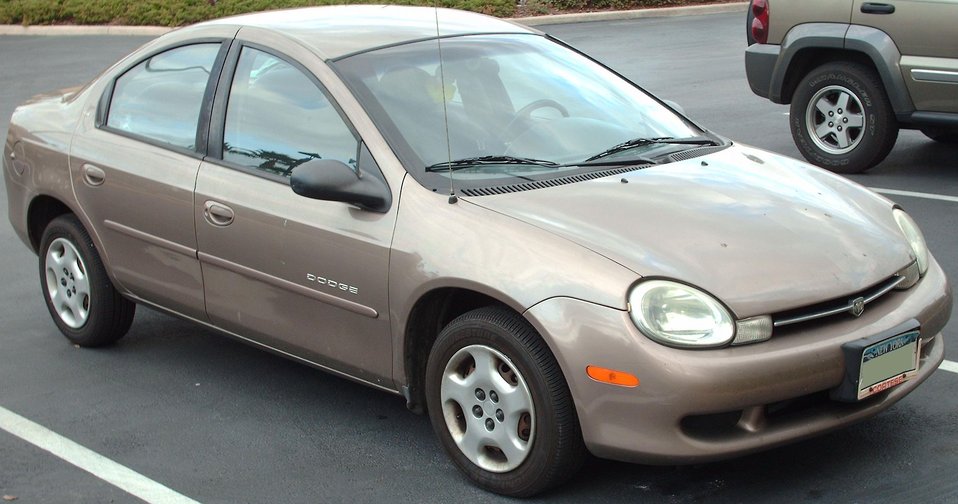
2000-2001 Dodge Neon photographed in Orlando, Florida, USA.